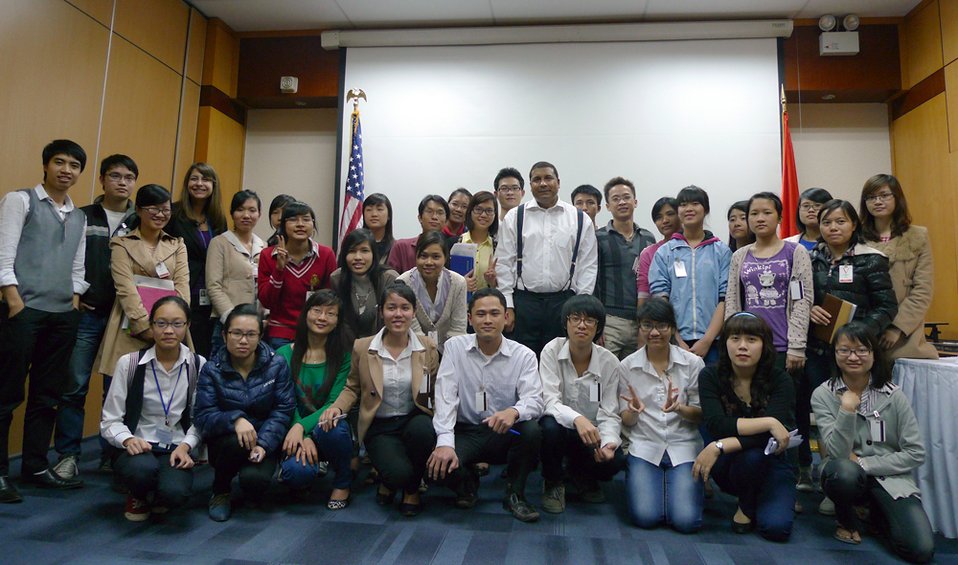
Deputy Assistant Secretary Rose Meets With Vietnamese Students

Deputy Assistant Secretary of State for Arms Control, Verification and Compliance Frank Rose meets with Vietnamese students at the American Center in Hanoi, Vietnam, after delivering a speech on Sustaining the Space Environment for the Future, on March 8, 2012.